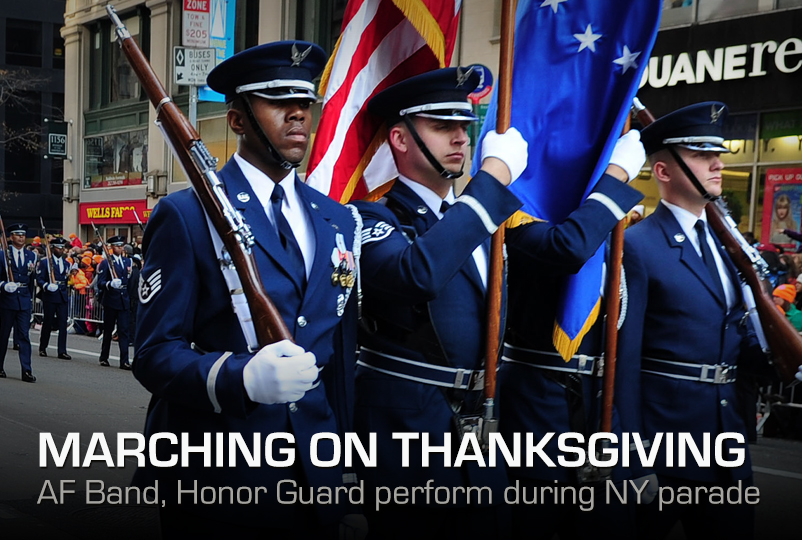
Marching on Thanksgiving